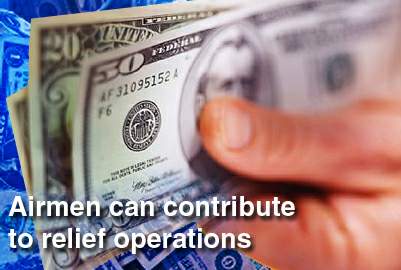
Airmen have opportunity to give

Airmen now can contribute to relief operations for the Jan. 12 earthquake that struck Haiti that caused widespread death and destruction, according to Air Force and Office of Personnel Management officials.